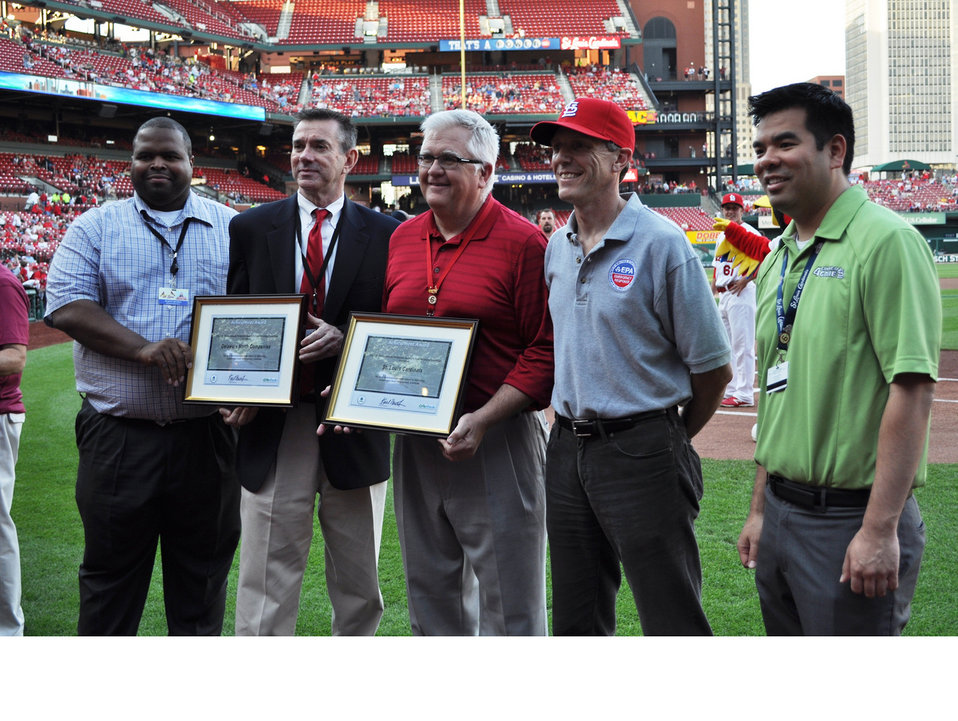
EPA Recognizes St. Louis Cardinals for Composting

April 29, 2013 – In an on-field ceremony, EPA recognized the St. Louis Cardinals baseball club for efforts to divert, donate and compost food waste around Busch Stadium.

Their efforts are impressive! Since 2008, they have diverted approximately 2,000 tons of solid waste from local landfills. There are approximately 550 recycling bins throughout the stadium which helps them to recycle an average of four tons of stadium trash per game.

Check out more on EPA's Food Recovery Program www.epa.gov/smm/foodrecovery